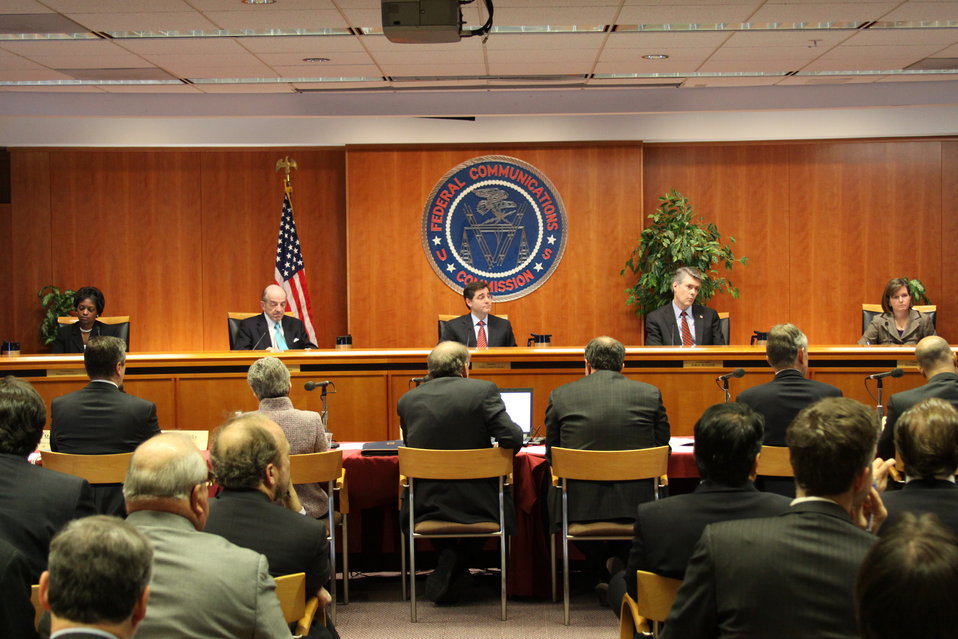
December Commission Meeting